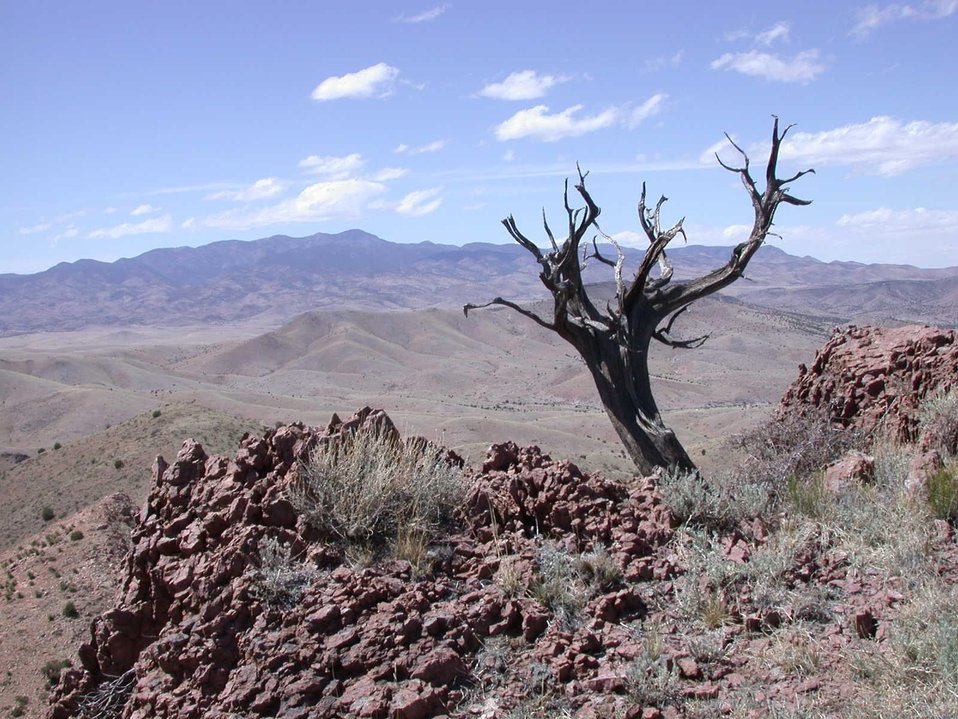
Chupadera Peak Trail summit

Bosque del Apache National Wildlife Refuge, New Mexico.